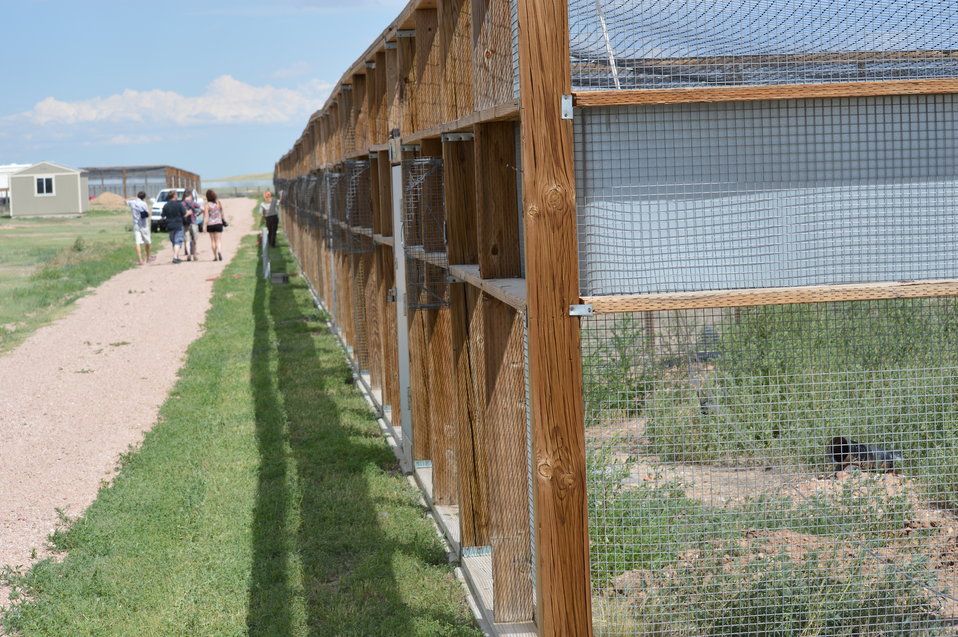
Interns visit the NBFFCC

In the summer of 2012, USFWS Region 6 interns visited the National Black-footed Ferret Conservation Center (NBFFCC) in Colorado to learn how the program reintroduces the endangered Black-footed ferret back into its native habitat.